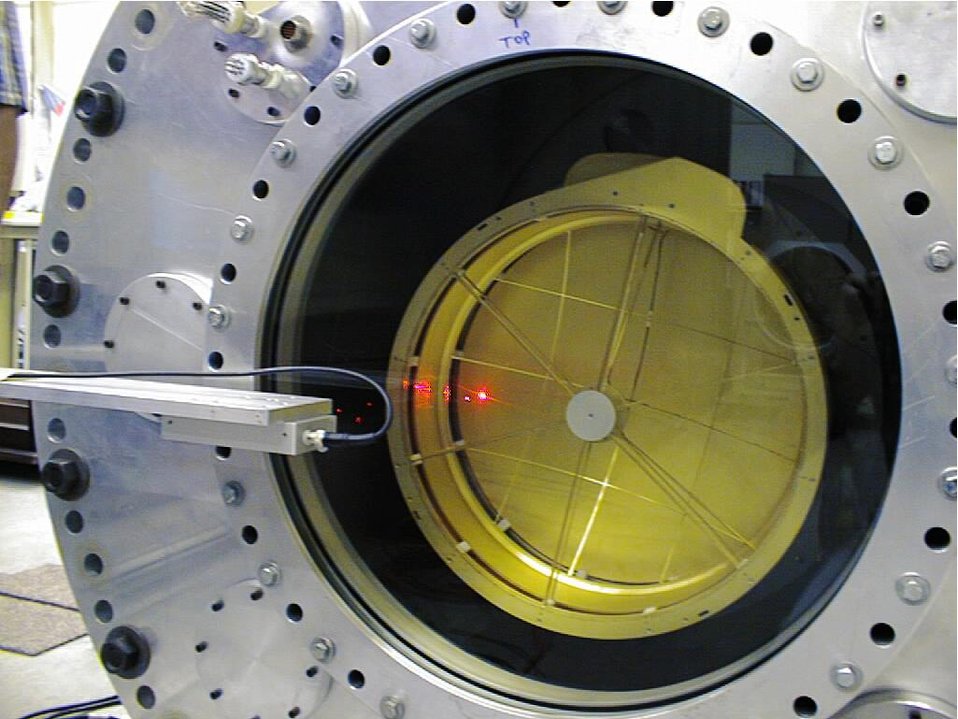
THE SOLAR WIND CONCENTRATOR FOR THE GENESIS SPACECRAFT UNDERGOING VACUUM TESTING AT LOS ALAMOS NATIONAL LABORATORY.

THE SOLAR WIND CONCENTRATOR, ION MONITOR AND ELECTRON MONITOR WERE DESIGNED AND BUILT BY A TEAM OF SCIENTISTS AND ENGINEERS AT LOS ALAMOS NATIONAL LAB FOR THE GENESIS SPACECRAFT. THE SOLAR WIND CONCENTRATOR IS DESIGNED TO COLLECT A HIGH CONCENTRATION OF OXYGEN AND RETURN THE SAMPLE TO EARTH FOR ANALYSIS. THE ION AND ELECTRON MONITORS INSTANTANEOUSLY DETERMINE WHICH TYPE OF SOLAR WIND IS PASSING THE SPACECRAFT AND TRANSLATE THE KNOWLEDGE INTO ACTIONS FOR THE SOLAR WIND CONCENTRATOR AND SOLAR WIND COLLECTOR ARRAYS.